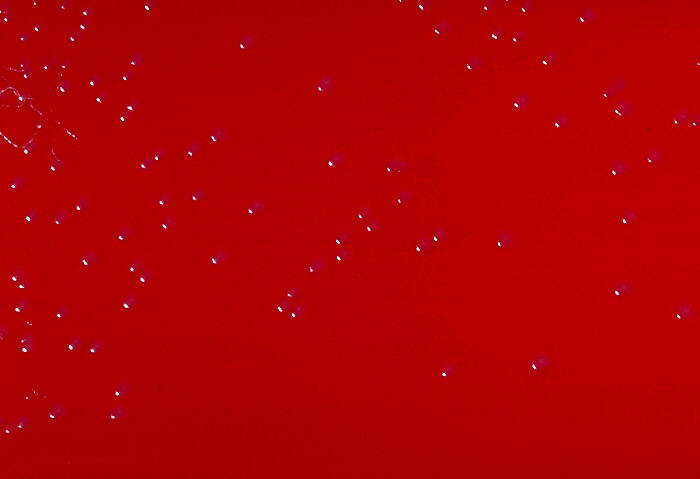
Blood agar plate culture of Corynebacterium diphtheriae intermedius.